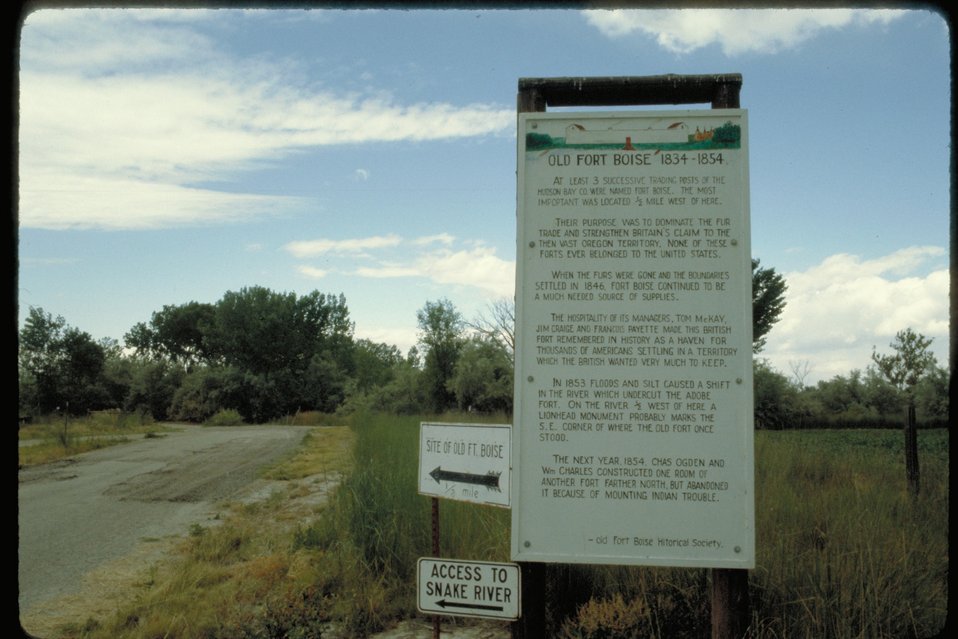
Fort Boise Oregon Trail Lower Snake River District